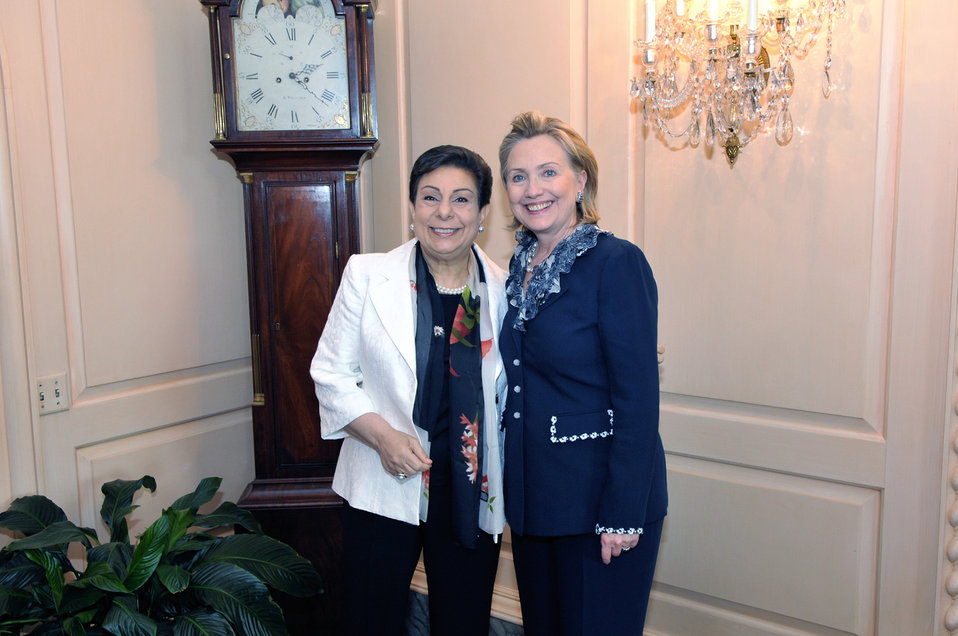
Secretary Clinton Poses for a Photo With PLO Executive Committee Member Hanan Ashrawi

U.S. Secretary of State Hillary Rodham Clinton poses for a photo with PLO Executive Committee Member Hanan Ashrawi at the U.S. Department of State in Washington, D.C., on July 8, 2010.